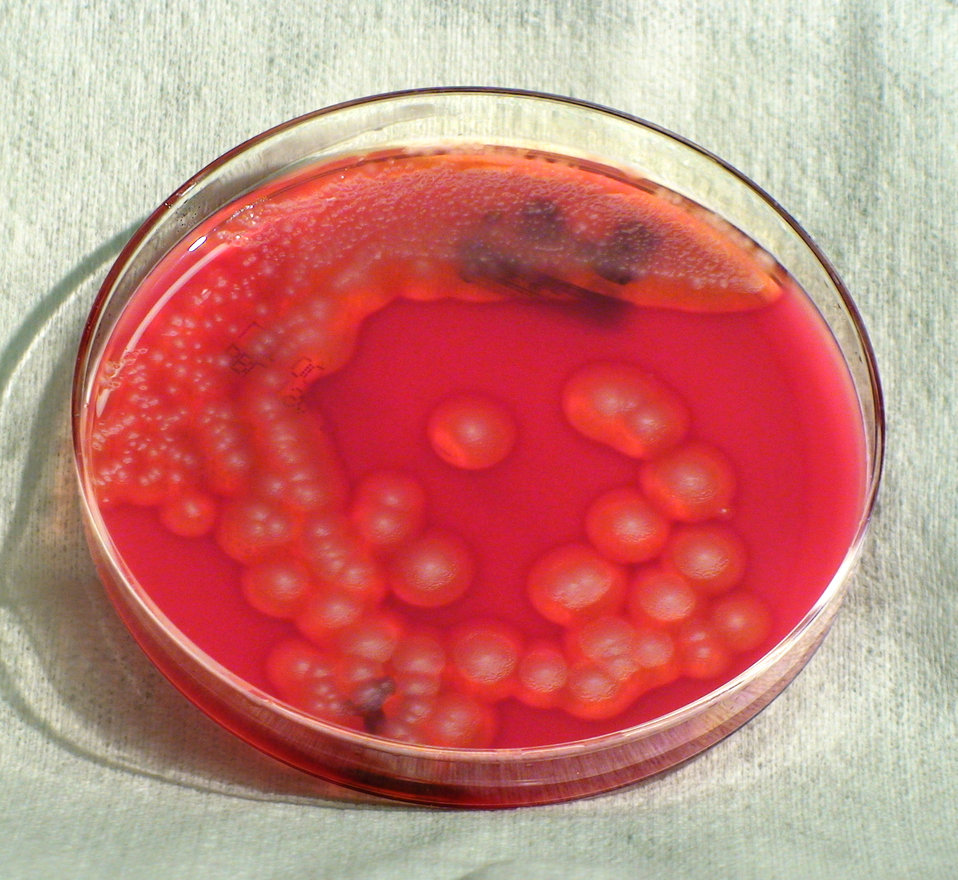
This photograph depicts the colonial morphology displayed by Gram-positive Bacillus cereus bacteria, which was grown on a medium of sheep's blood agar (SBA), for a 24 hour time period, at a temperature of 37�C. Worthy of note, is the hemolytic reaction caused by these bacteria, as evidenced by the faded, hazy coloration surrounding these colonies. It is within this region of faded red color, that the red blood cells in the SBA medium had been lysed, or destroyed by chemical by-products produced by these organisms, thereby, liberating their intracellular hemoglobin. See PHIL 12378, for a closer view of these bacterial colonies, and this hemolytic reaction.